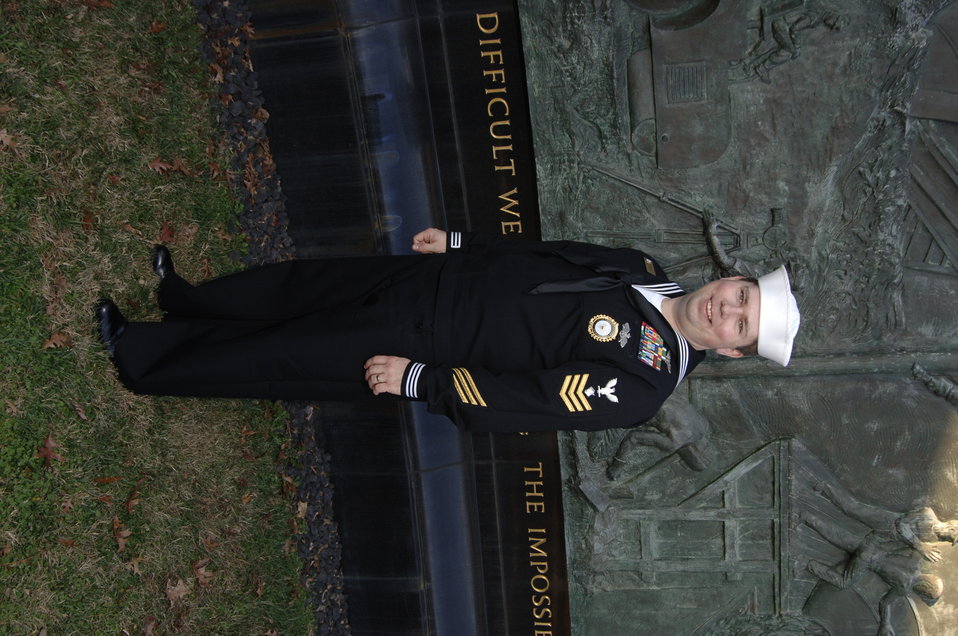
Brian Lawler, the Region One Diversity Employment Specialist, started his naval career right out of high school, enlisting in 1990 and retiring in 2010. During his time in the Navy, he served on the Battleship USS WISCONSIN (BB-64), the aircraft carriers USS GEORGE WASHINGTON (CVN-73) and USS JOHN C. STENNIS (CVN-74), and completed a tour with the Navy “SEABEES” with the U.S. Naval Construction Battalion SEVENTY-FOUR. His shore tours include the Naval Reserve Readiness Center and Personnel Support Detachment in Great Lakes, Illinois, Navy Recruiting District Portland, Oregon, and Personnel Support Detachment Bangor, Washington. His decorations include the Navy & Marine Corps Commendation Medal, the Navy Achievement Medal, and the Combat Action Ribbon. Over the course of his 20-year career in the Navy, he has deployed in support of Operation Desert Shield/Storm, Iraqi Freedom, Enduring Freedom and Foal Eagle.